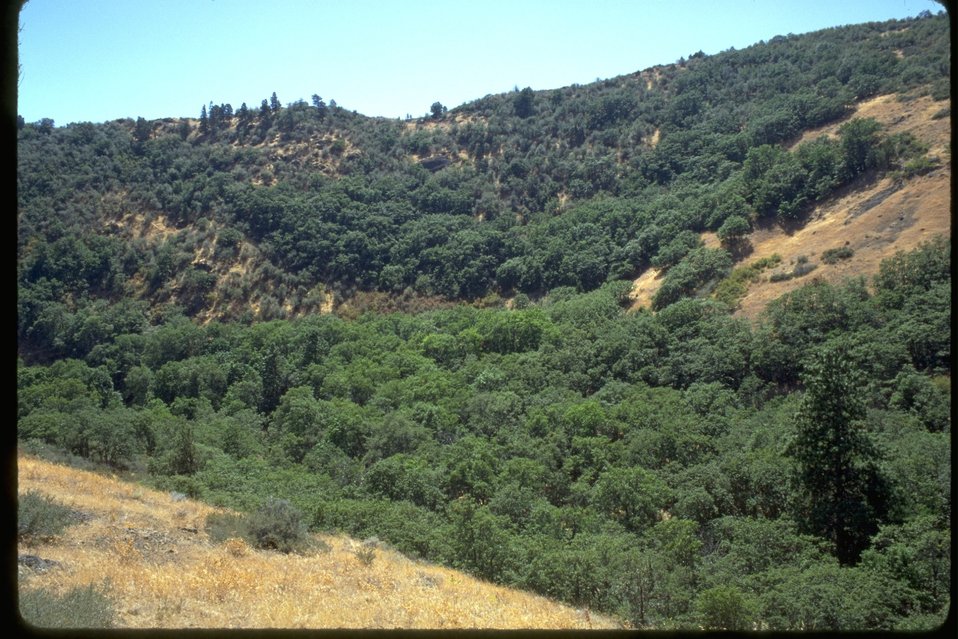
West side of the Scotch Creek RNA.